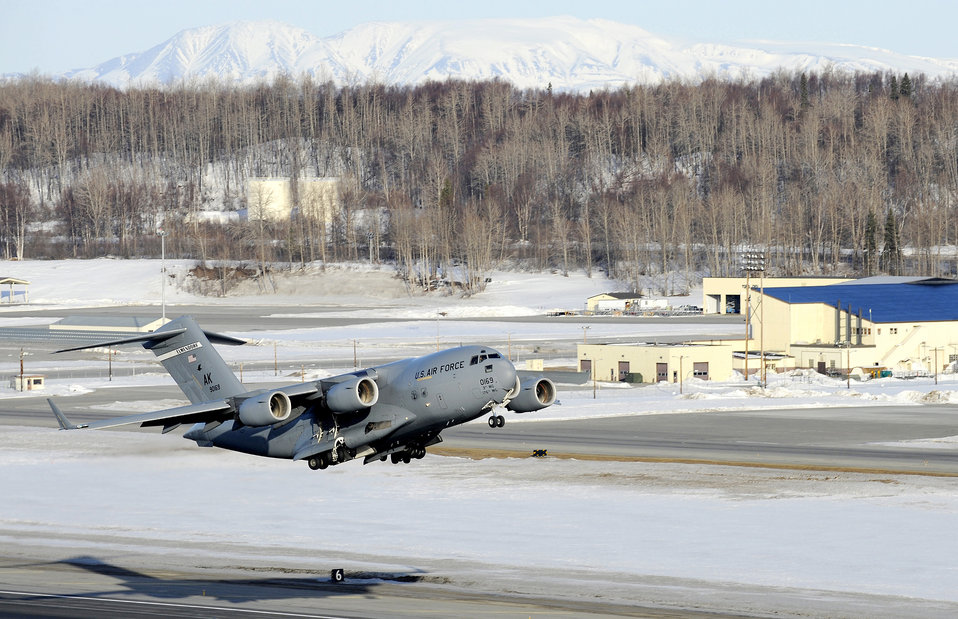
Commander flies C-17

A C-17 Globemaster III takes off from Elmendorf Air Force Base, Alaska,March 26, 2010. Col. Thomas Bergeson, 3rd Wing commander and F-22 Raptor pilot, was behind the controls of the aircraft for the first time. The flight included a KC-135 Stratotanker refuel, tactical arrivals and departures at Allen Army Airfield and low-level flying.